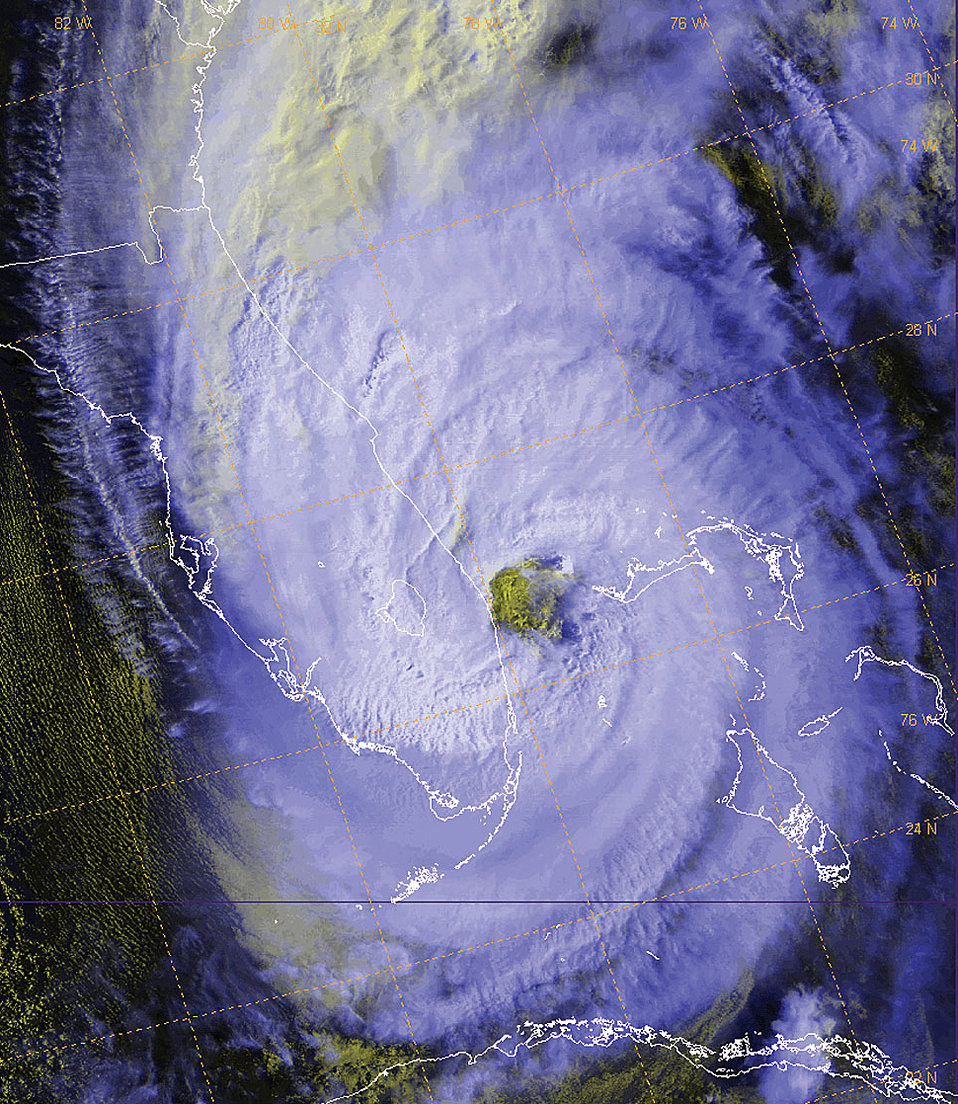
Wilma's progress

OFFUTT AIR FORCE BASE, Neb. -- This satellite photo, provided by the Air Force Weather Agency here, shows the status of Hurricane Wilma as of 8:25 a.m. EST, today. The image captures the Category 2 storm off the coast of Florida. The center of the storm's eye about 75 miles northeast from Miami. A Defense Meteorological Satellite Program satellite took the image, and is actually a composite of two satellite images.